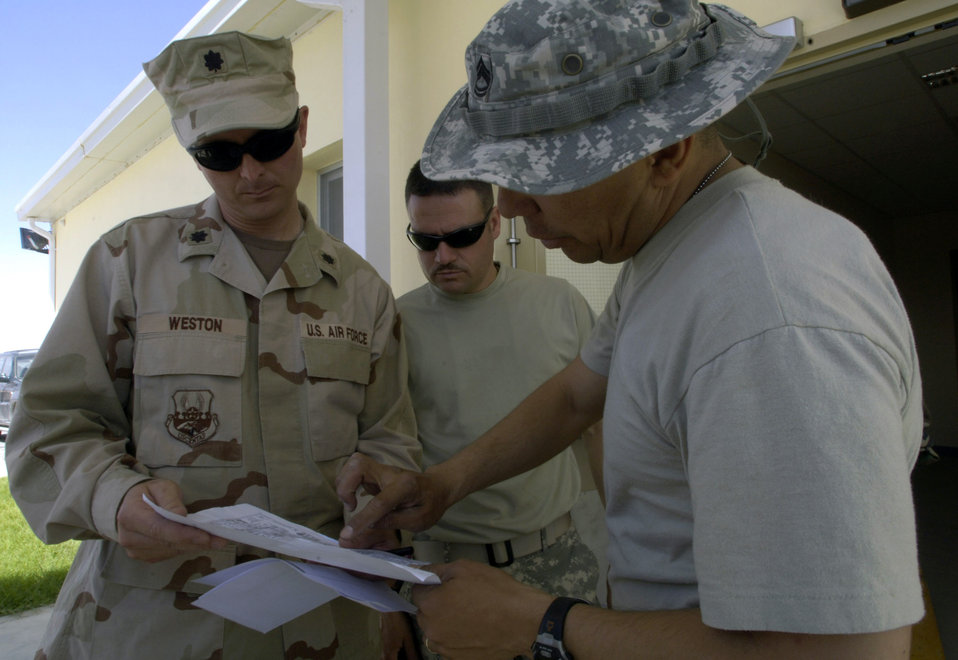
Airmen mentorship helps develop Afghan hospital

Lt. Col. Gil Weston (from left), Master Sgt. Doug Suddueth and Army Sgt. 1st Class Antonio Rivas look over a hospital schematic Aug. 18 in Afghanistan. The three are assisting in the installation of medical equipment into a new $6.5 million, 50-bed hospital on the Afghan national army Hero Camp near Kandahar Airfield in southern Afghanistan. Colonel Weston is a medical health facilities planner deployed from Atlanta. Sergeant Suddueth is deployed from Maxwell Air Force Base, Ala. Sergeant Rivas is deployed form Fort Sam Houston, Texas. They are medical logistics technicians and Afghan national army mentors assigned to the Combined Security Transition Command-Afghanistan on Camp Eggers in Kabul, Afghanistan.